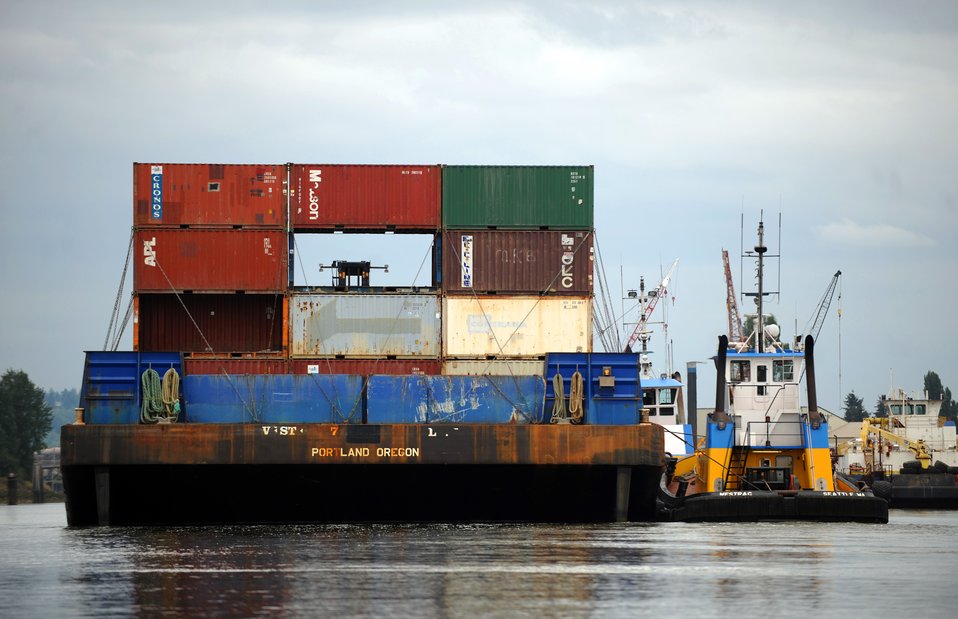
Industrial Uses

The Duwamish River remains a heavily used waterway for barges and other industrial traffic. Efforts to clean up and restore the river will have to consider many different, sometimes competing, uses. Visit www.epa.gov/region10/duwamish to learn more about EPA's efforts to clean up and restore the lower Duwamish River.